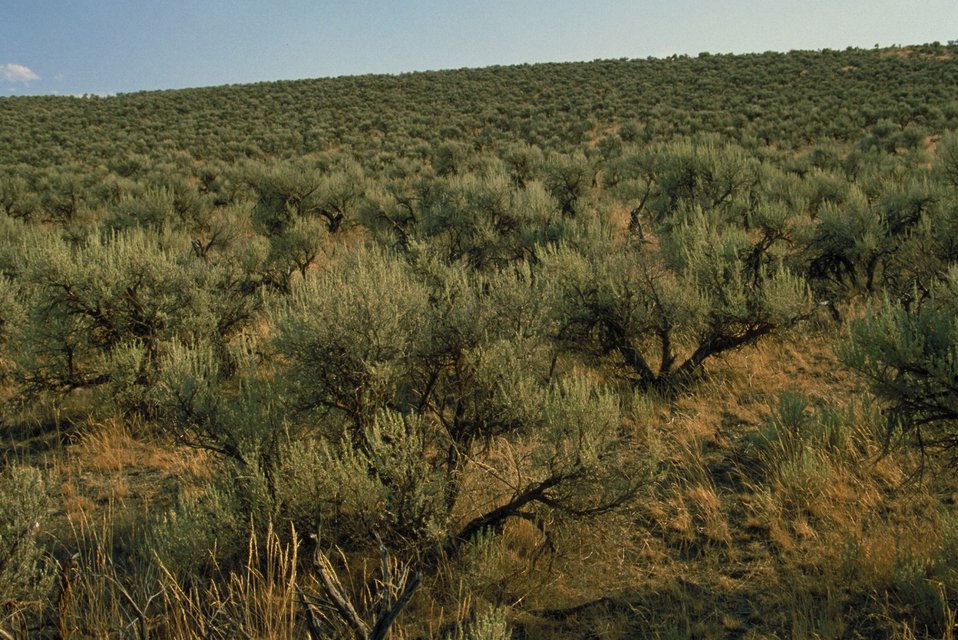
Fuels or brush Fire Season 2000 Lower Snake River District LSRD